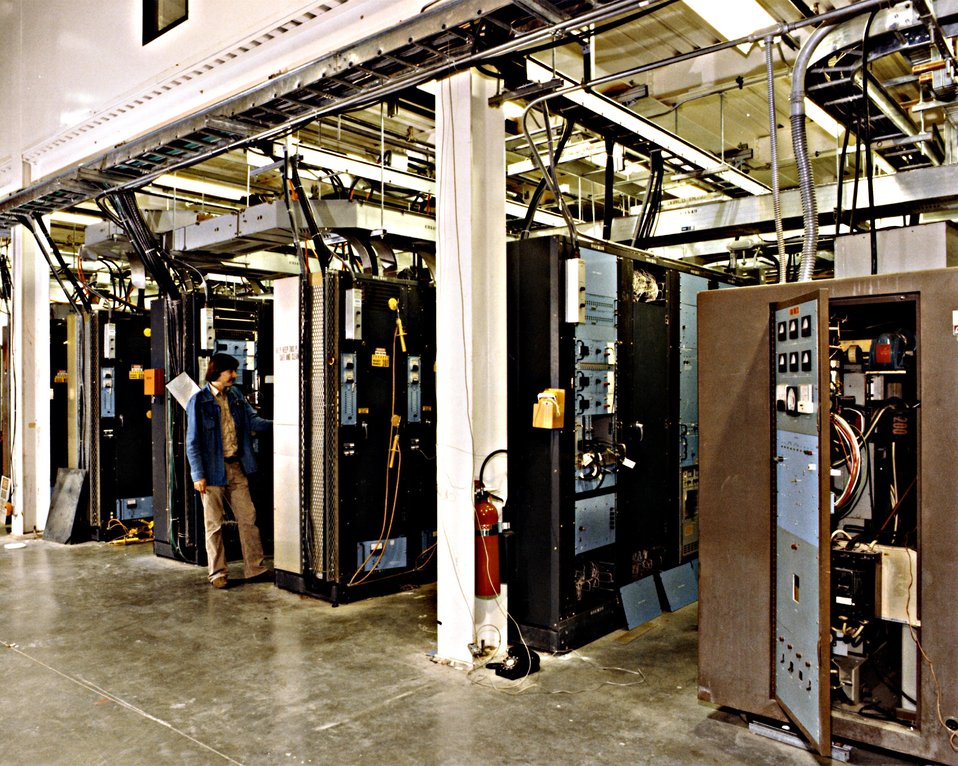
THE POWER SUPPLY FOR THE QUARDUPOLE, SEXTAPOLE, AND BEND MAGNETS IS LOCATED IN REGION EIGHT.

THE POSITRON-ELECTRON PROJECT (PEP) IS A JOINT UNDERTAKING OF STANFORD LINEAR ACCELERATOR CENTER (SLAC) AND THE LAWRENCE BERKELEY LABORATORY (LBL). THE PEP MACHINE IS DESIGNED TO STORE BEAMS OF ELECTRONS AND POSITRONS CIRCULATING IN OPPOSITE DIRECTIONS AT SINGLE-BEAM ENERGIES BETWEEN 4 GEV AND 18 GEV. THE SOURCE OF THE BEAMS WILL BE THE PRESENT SLAC ACCELERATOR. THE COUNTER-ROTATING BEAMS OF ELECTRONS AND POSITRONS WILL COLLIDE WITH EACH OTHER AT SIX POINTS IN THE MACHINE. THESE COLLISION OR BEAM-INTERACTION POINTS WILL BE USED FOR HIGH-ENERGY PHYSICS EXPERIMENTS.